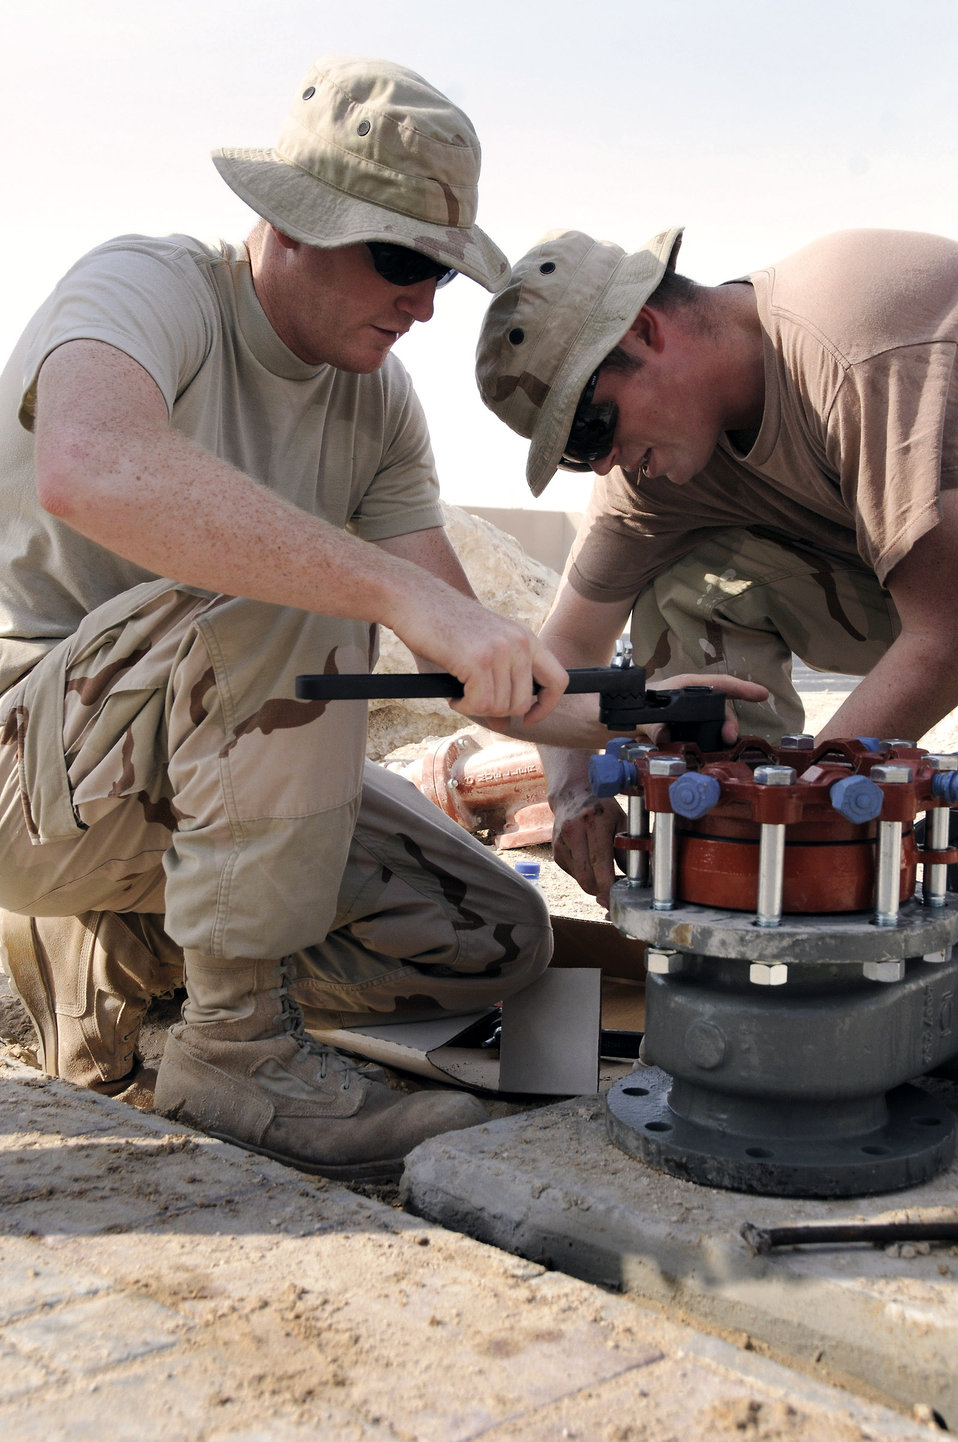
Emergency repairs

Staff Sgt. Josh Kreutzer and Staff Sgt. Justin Sharp tighten nuts on a mega lug Sept. 15 at a Southwest Asia air base. The mega lug is being prepared as a temporary valve to close off the end of a broken water pipe in order to restore water to the Blatchford-Preston Complex here. The overnight water main break resulted in a loss of water for the entire complex. The engineers, both assigned to the 379th Expeditionary Civil Engineer Squadron, are working to bring operations back to normal. Sergeant Kreutzer, a native of Fontana, Calif., is deployed from McChord Air Force Base, Wash., Sergeant Sharp, originally from Ulysses, Pa., is deployed from Scott AFB, Ill.